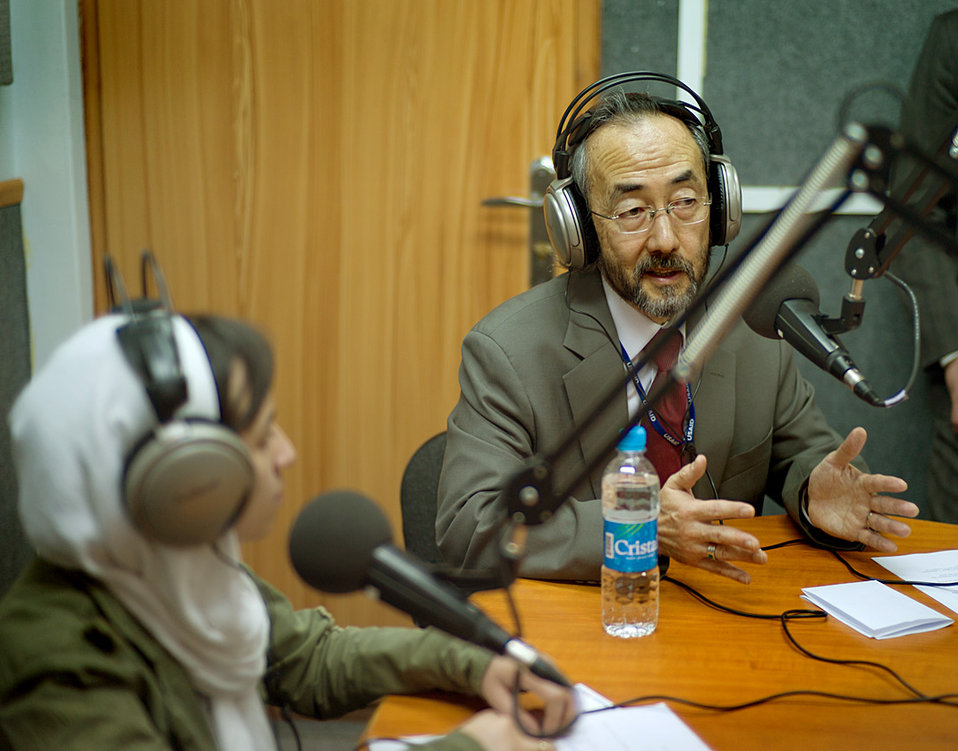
Ken Yamashita and Zarlasht Joya